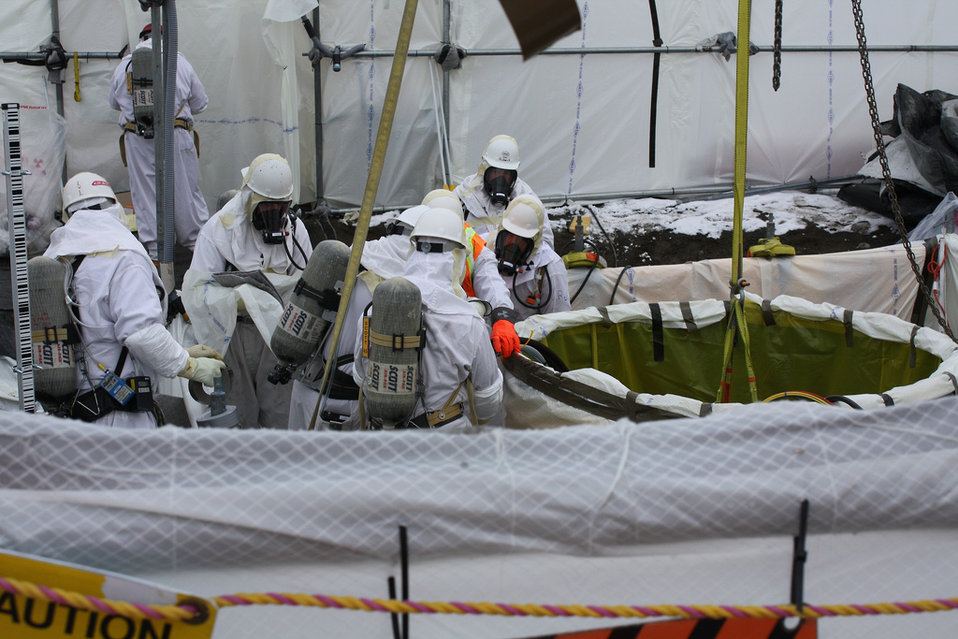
At Hanford, workers prepare to remove the core from tank C-107.